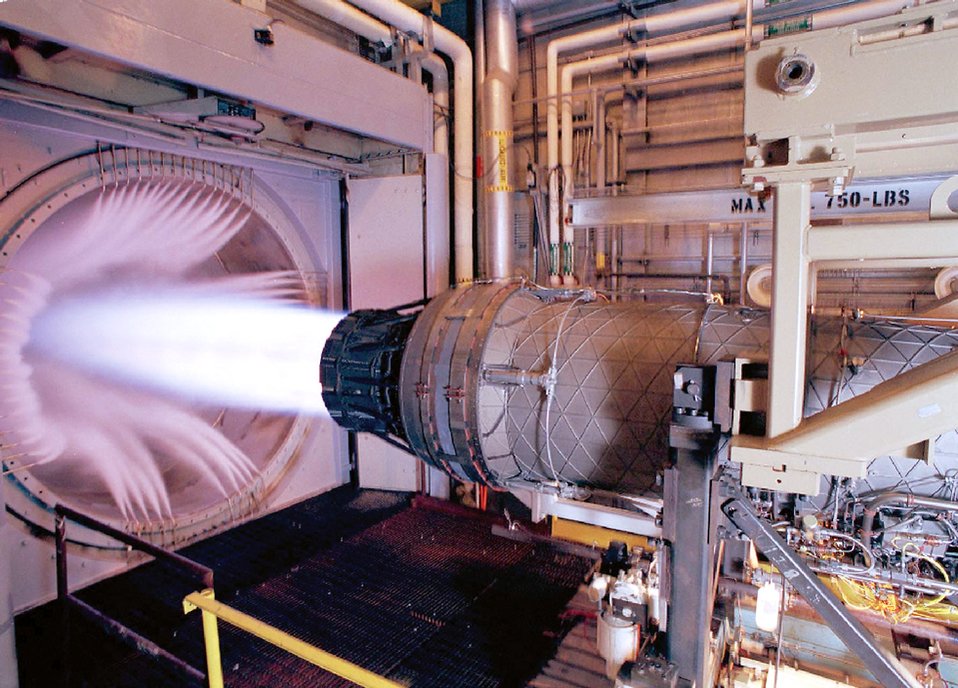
Engineers save Air Force millions with F100 engine test plan

A Pratt and Whitney F100 engine, the powerplant for the F-15 Eagle and F-16 Fighting Falcon, undergoes sea level testing in Arnold Engineering Development Center's Propulsion Development Test Cell J-2 at Arnold Air Force Base, Tenn.